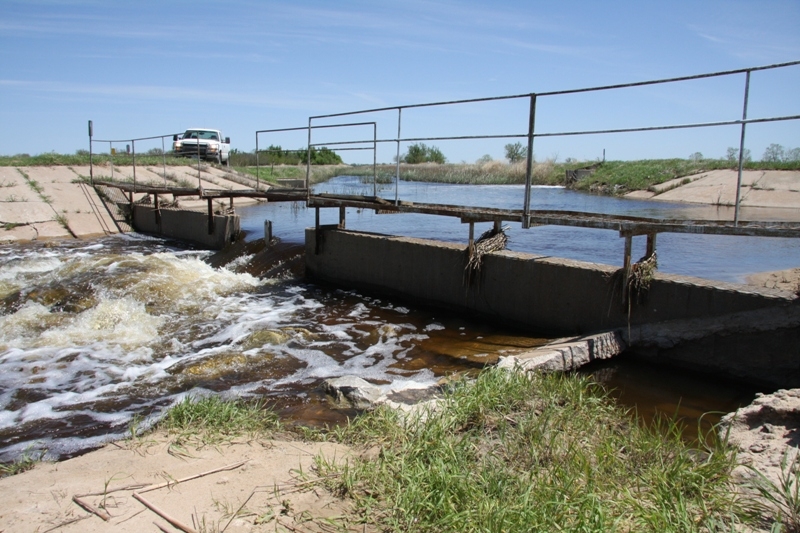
Water Control Structure Before Construction

Original condition of structure at Quivira National Wildlife Refuge in Kansas over the Rattlesnake Creek. Concrete slabs on canal slopes are broken and displaced. Concrete weir is deteriorated and walkway is unsafe.